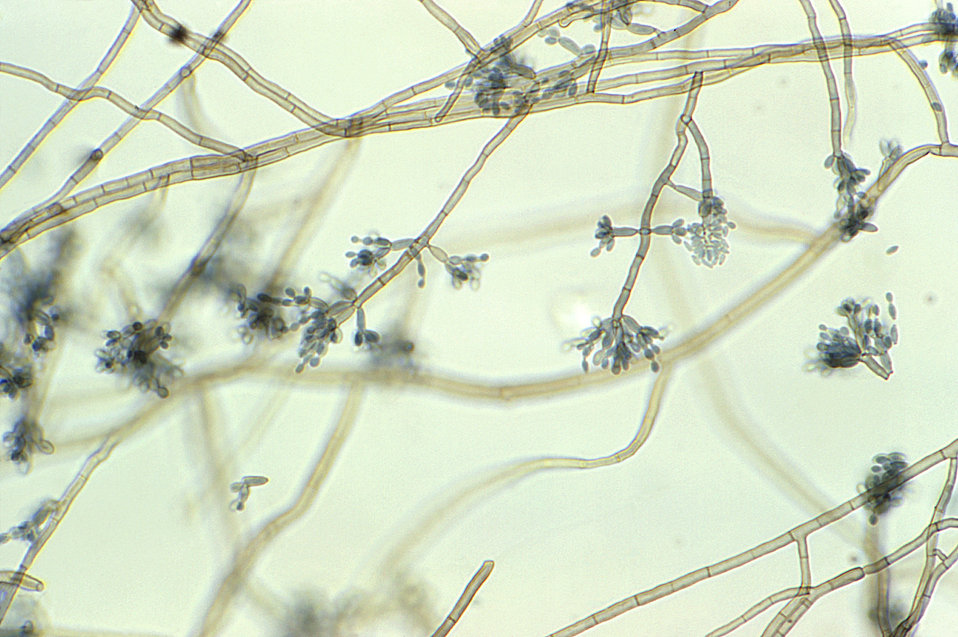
Magnified 400X, this slide culture photomicrograph highlighted some of the ultrastructural morphology exhibited by numbers of Cladosporium sphaerospernum fungal organisms. Observable in this view are many of the fungi's reproductive structures including its conidiophores, and clustered atop these stalks, its asexual spores, or conidia.